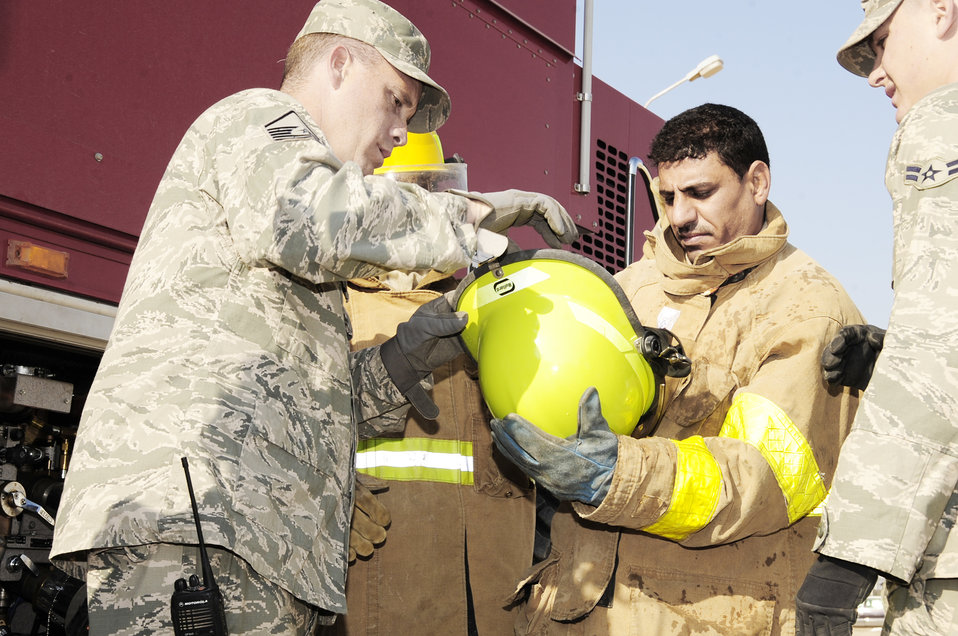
Ali firefighters prepare Iraqis for future

Master Sgt. Christopher Sparks, instructs an Iraqi firefighter on proper wear of personal protective equipment before a fire training exercise Dec. 28, 2009 at Camp UR, Iraq. The Airmen provide training to the Iraqi Army fire department three times a week to ensure Iraqi firefighters are self sufficient. Sergeant Sparks is from the 407th Expeditionary Civil Engineer Squadron fire department.